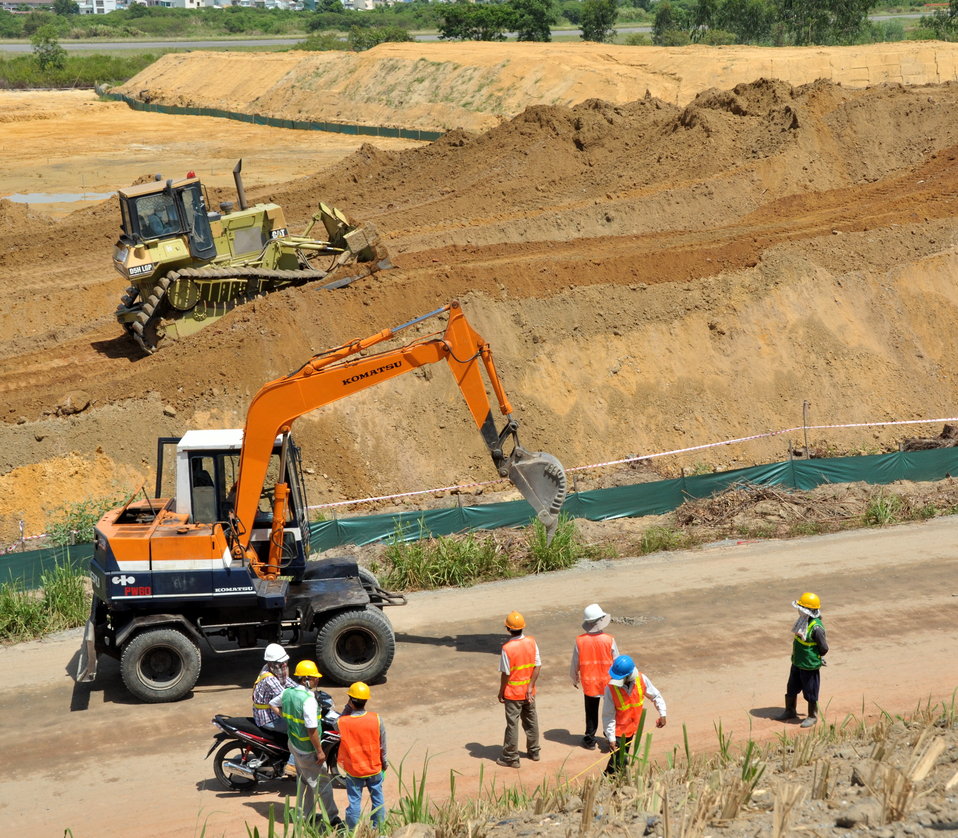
Environmental Remediation Progress at the Danang Airport site

Progress at the Remediation of Dioxin Contamination Project Site

Danang, Vietnam, June 5, 2013